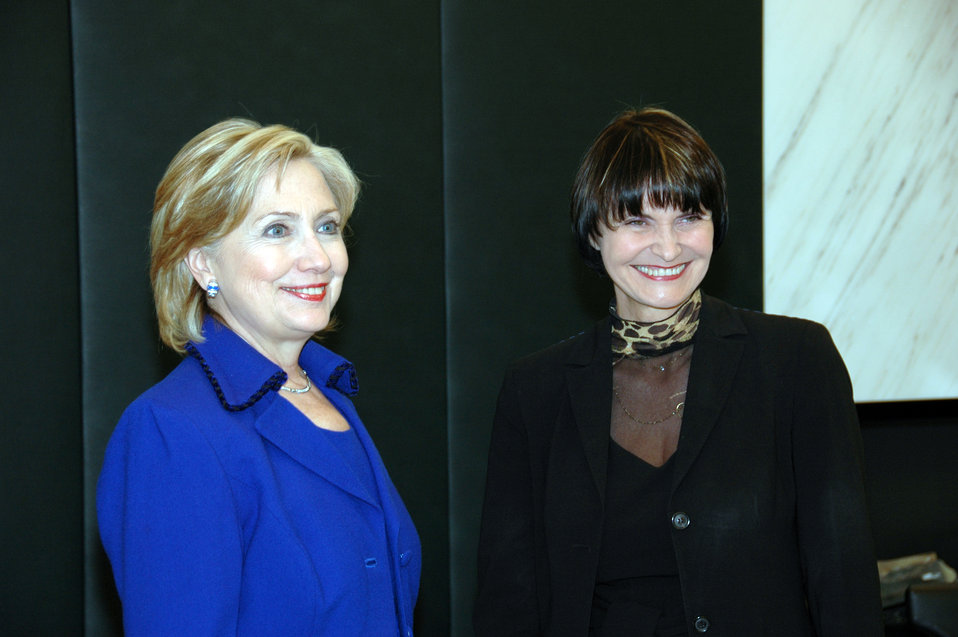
Secretary Clinton Meets Swiss Foreign Minister

U.S. Secretary of State Hillary Rodham Clinton with Swiss Foreign Minister Micheline Calmy-Rey in Zurich, Switzerland October 9, 2009.